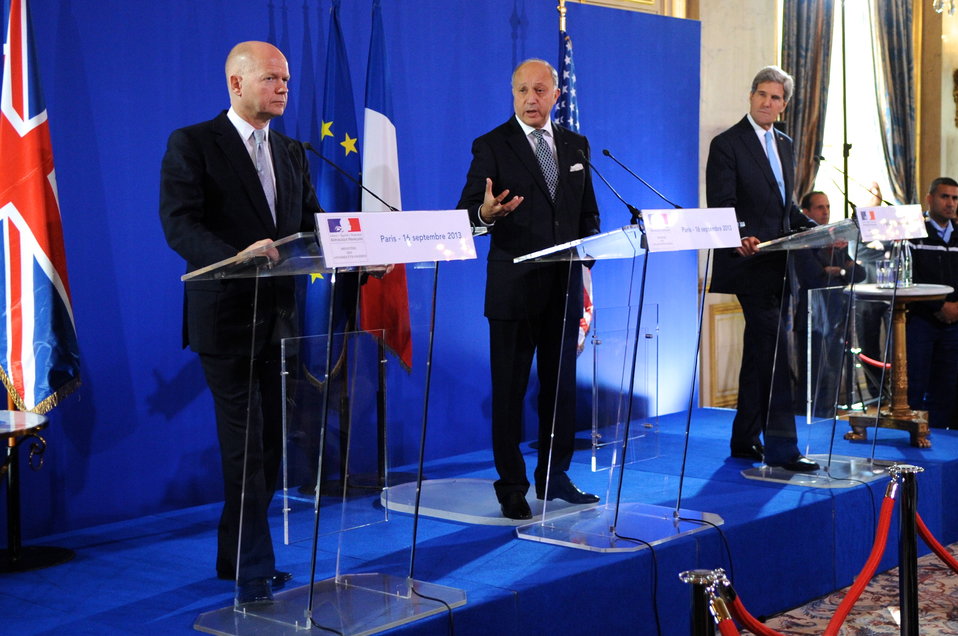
Secretary Kerry, P3 Foreign Ministers Hold News Conference About Syria

U.S. Secretary of State John Kerry and British Foreign Secretary William Hague listen as French Foreign Minister Laurent Fabius speaks during a joint news conference after P3 meetings focused on Syria at the Ministry of Foreign Affairs in Paris on September 16, 2013.